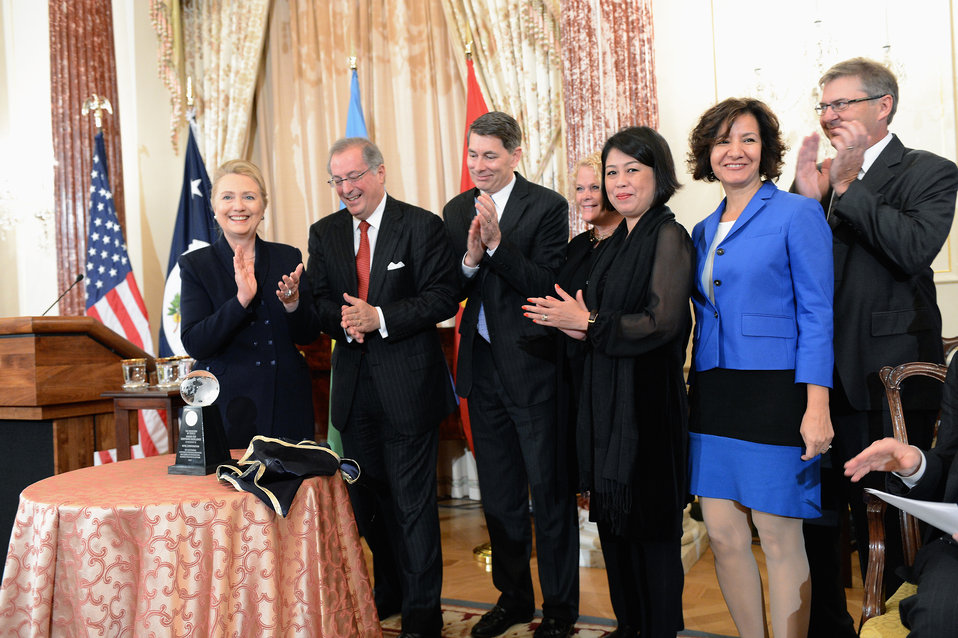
Secretary Clinton Presents the 14th Annual Award for Corporate Excellence

U.S. Secretary of State Hillary Rodham Clinton presents the 14th Annual Award for Corporate Excellence (ACE) at the U.S. Department of State in Washington, D.C., November 28, 2012.